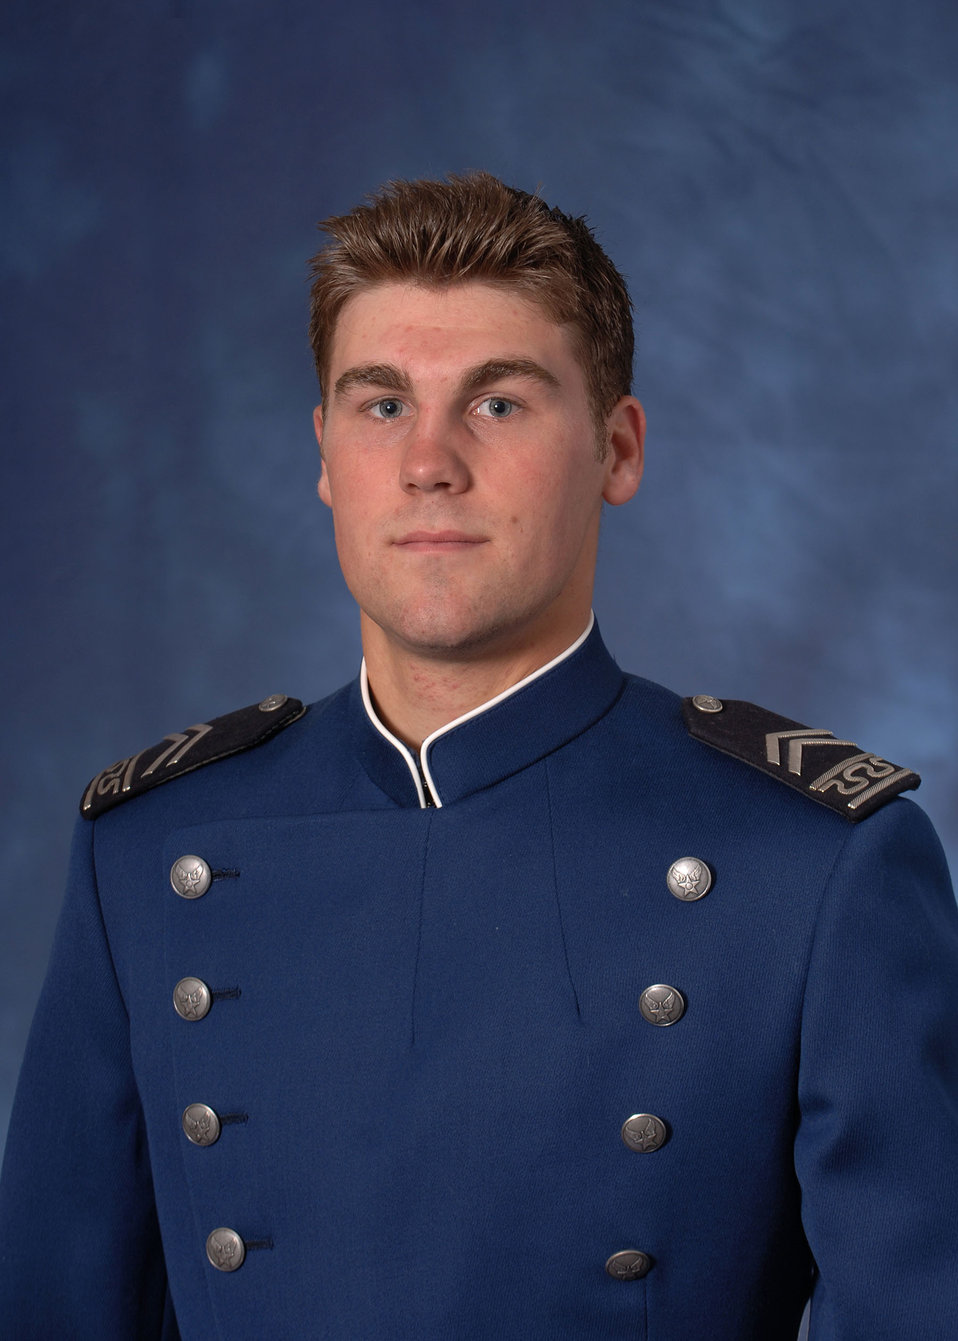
Hockey: Two Falcons earn awards

Air Force junior Eric Ehn was named AHA player of the year. Ehn led the nation in scoring 14 of the last 17 weeks of play. He leads the AHA in goals, assists, points, shots and plus/minus. He was named AHA Offensive Player of the Week twice this season and set a new AHA record for points in a season in conference games.